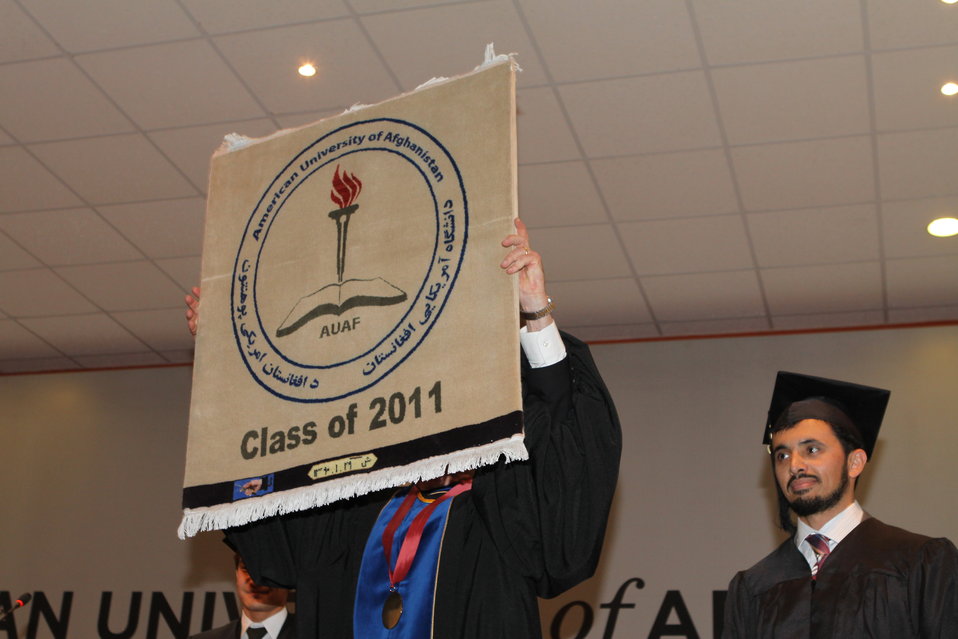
100526 AUAF Graduation 319